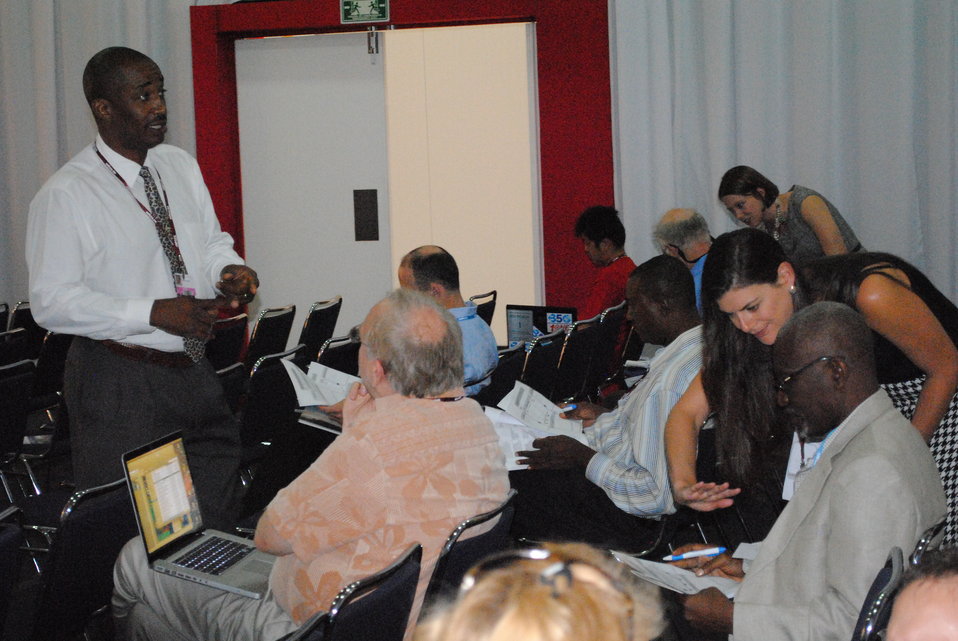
St. Lucia Officer D'Avergene Speaks With Members of the Audience

Crispin D'Avergene, Chief Sustainable Officer of the St. Lucia Ministry of Physical Development and Environment speaks with members of the audience at the side event, 'Stakeholder Driven Approach to Adaptation -- East Caribbean,' at the U.S. Center at COP-16 in Cancun, Mexico, on November 30, 2010.